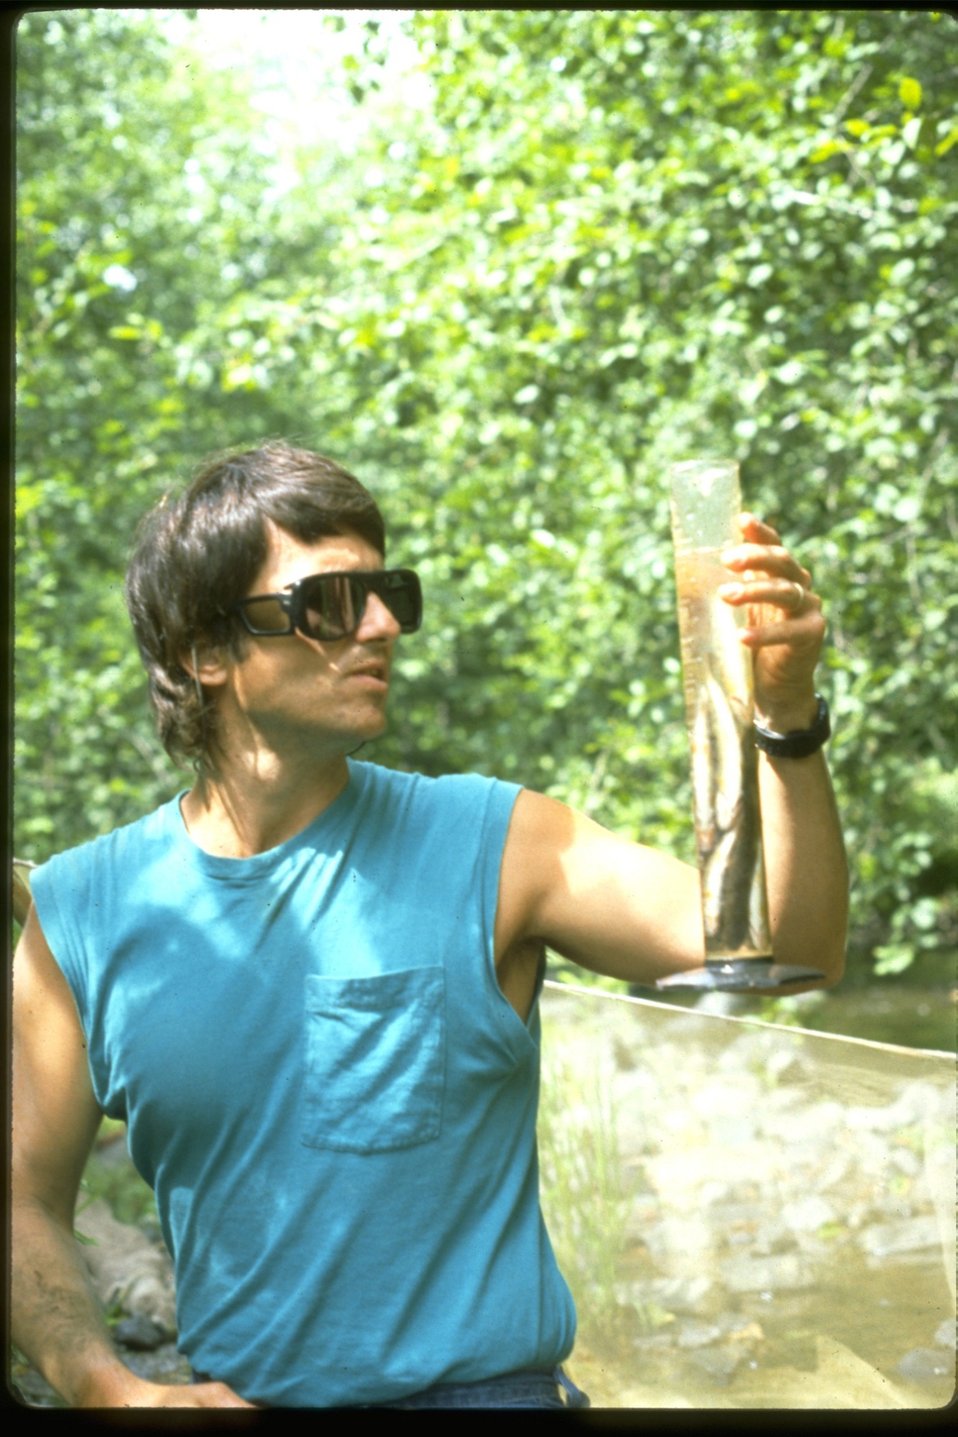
Fish Counting.